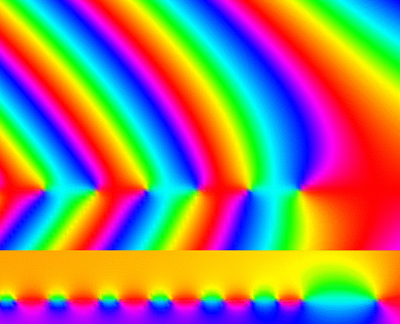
Gamma function

Graph showing part of the complex number phase of the gamma function and a related function. One of the most important of the 'special functions' discovered in the 18th century, the gamma function is related to the more familiar factorial function and plays a role in a wide variety of applications of probability and statistics. Here the pattern resembles that of fluid flow near the end of a line of vortices.